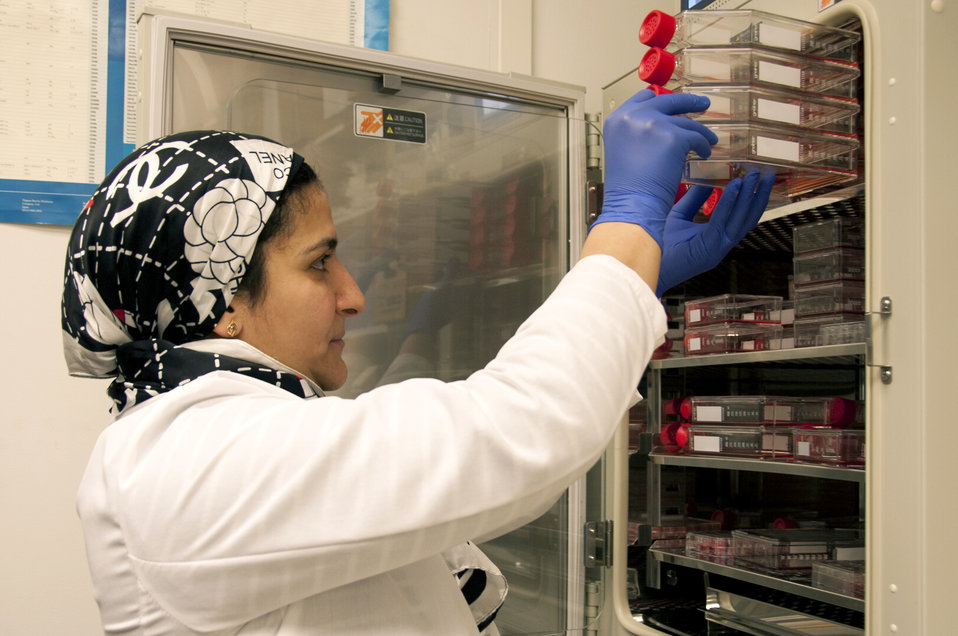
Stem Cell Research (0488)

Heba Degheidy, M.D., Ph.D., a post-doctoral research fellow at FDA, stores stem cell samples for analysis in an FDA laboratory on the National Institutes of Health campus in Bethesda, Md.

To learn more about stem cell research, read this FDA Consumer Update:

Adult Stem Cell Research Shows Promise

This photo is free of all copyright restrictions and available for use and redistribution without permission. Credit to the U.S. Food and Drug Administration is appreciated but not required.

Privacy and use information: www.flickr.com/people/fdaphotos/